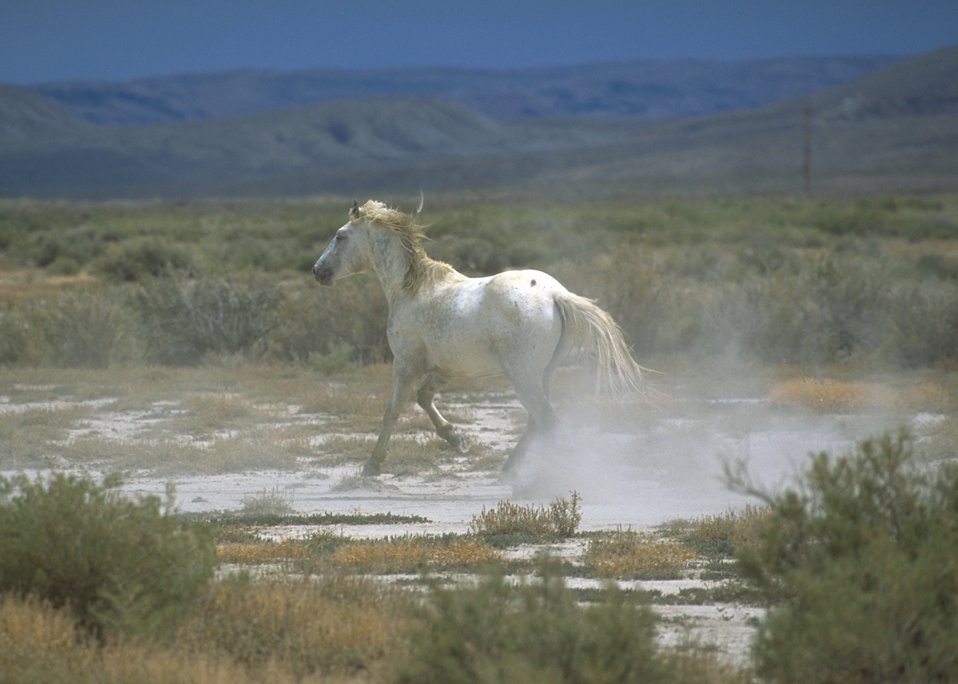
Wild horses, Rock Springs Field Office.